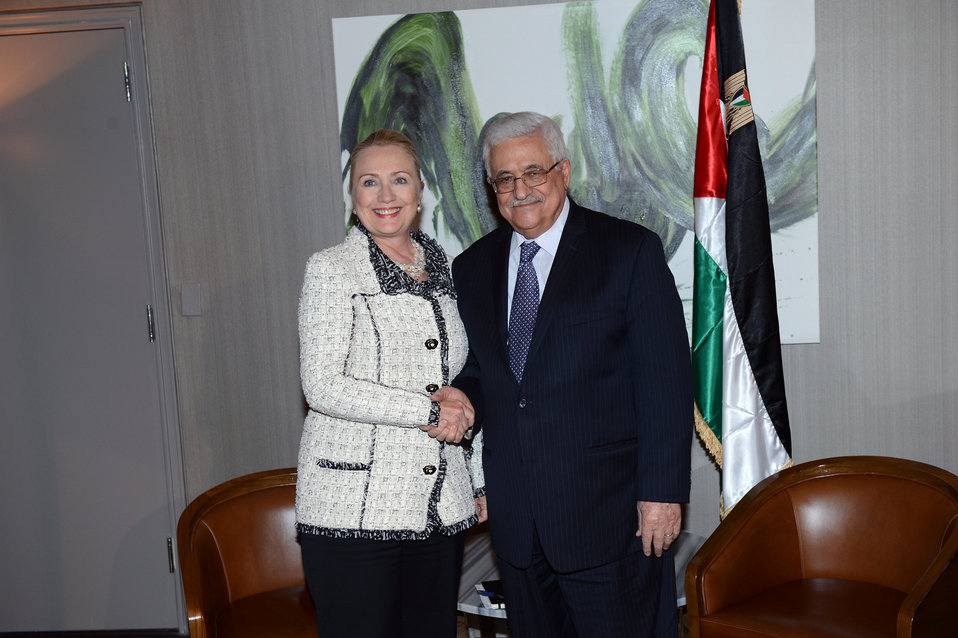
Secretary Clinton Meets With Palestinian Authority President Abbas

U.S. Secretary of State Hillary Rodham Clinton meets with Palestinian Authority President Mahmoud Abbas in New York, New York on September 26, 2012.